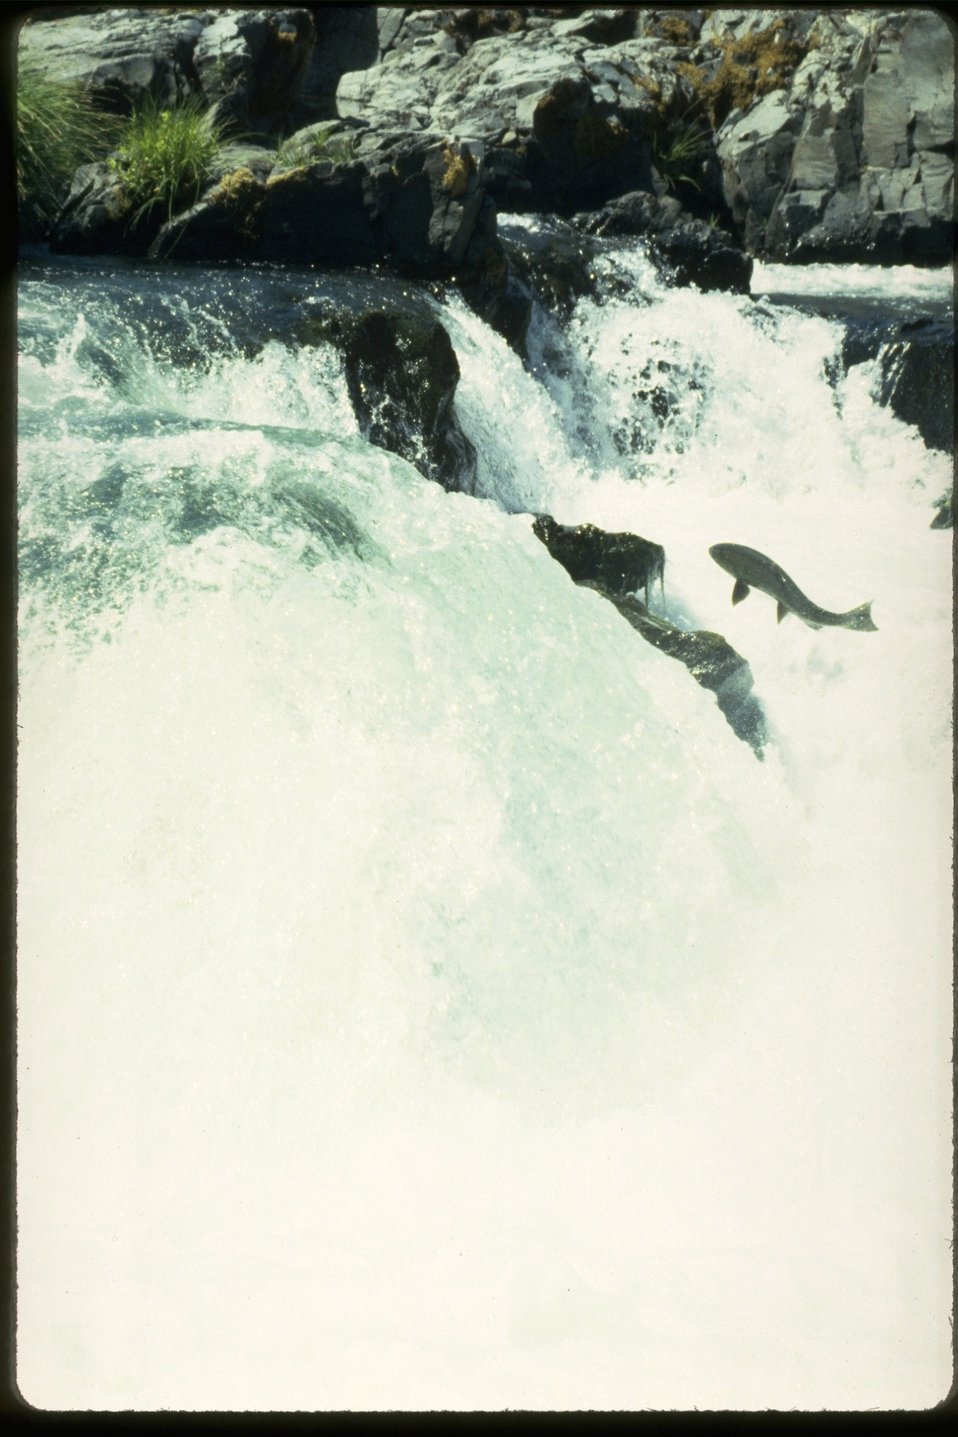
Fish jumping at Deadline Falls.